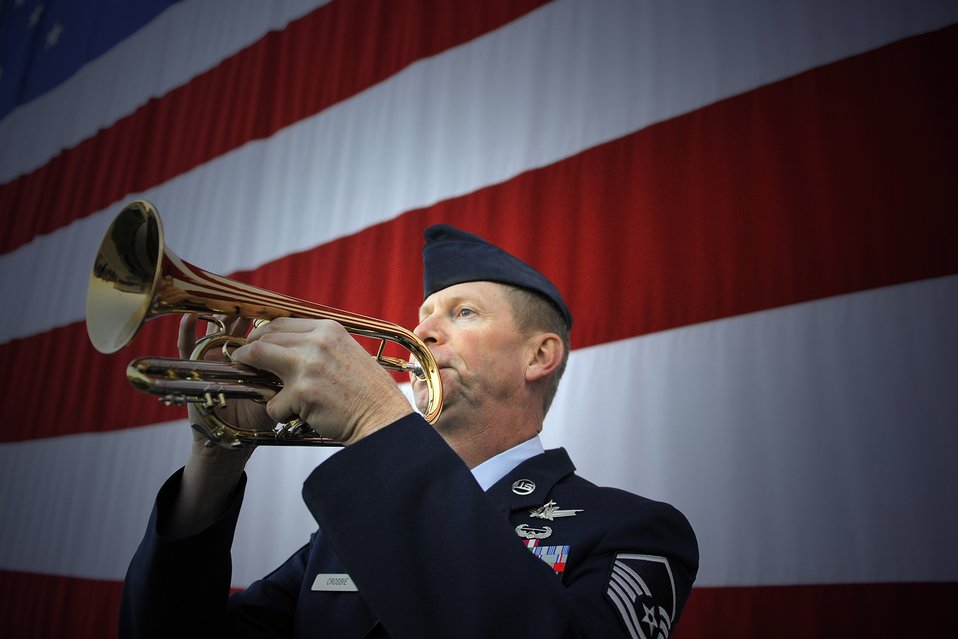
Taps

Master Sgt. James Crosbie plays “Taps” during the 310th Space Wing’s 9/11 memorial ceremony Sept. 9, 2011, at Schriever Air Force Base, Colo. The ceremony was held to honor the victims of the September 11, 2001, attacks.